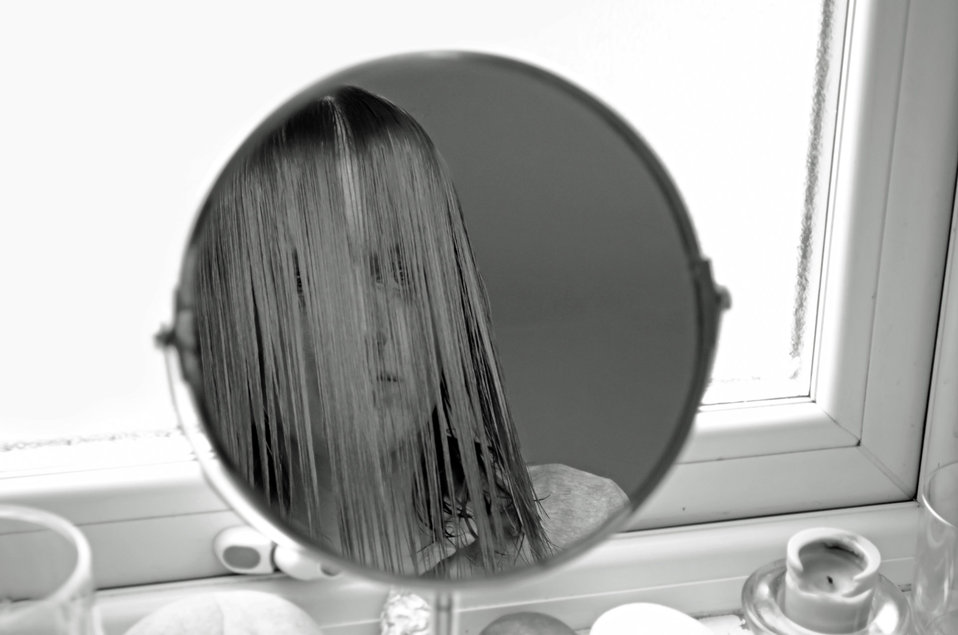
How i see myself.